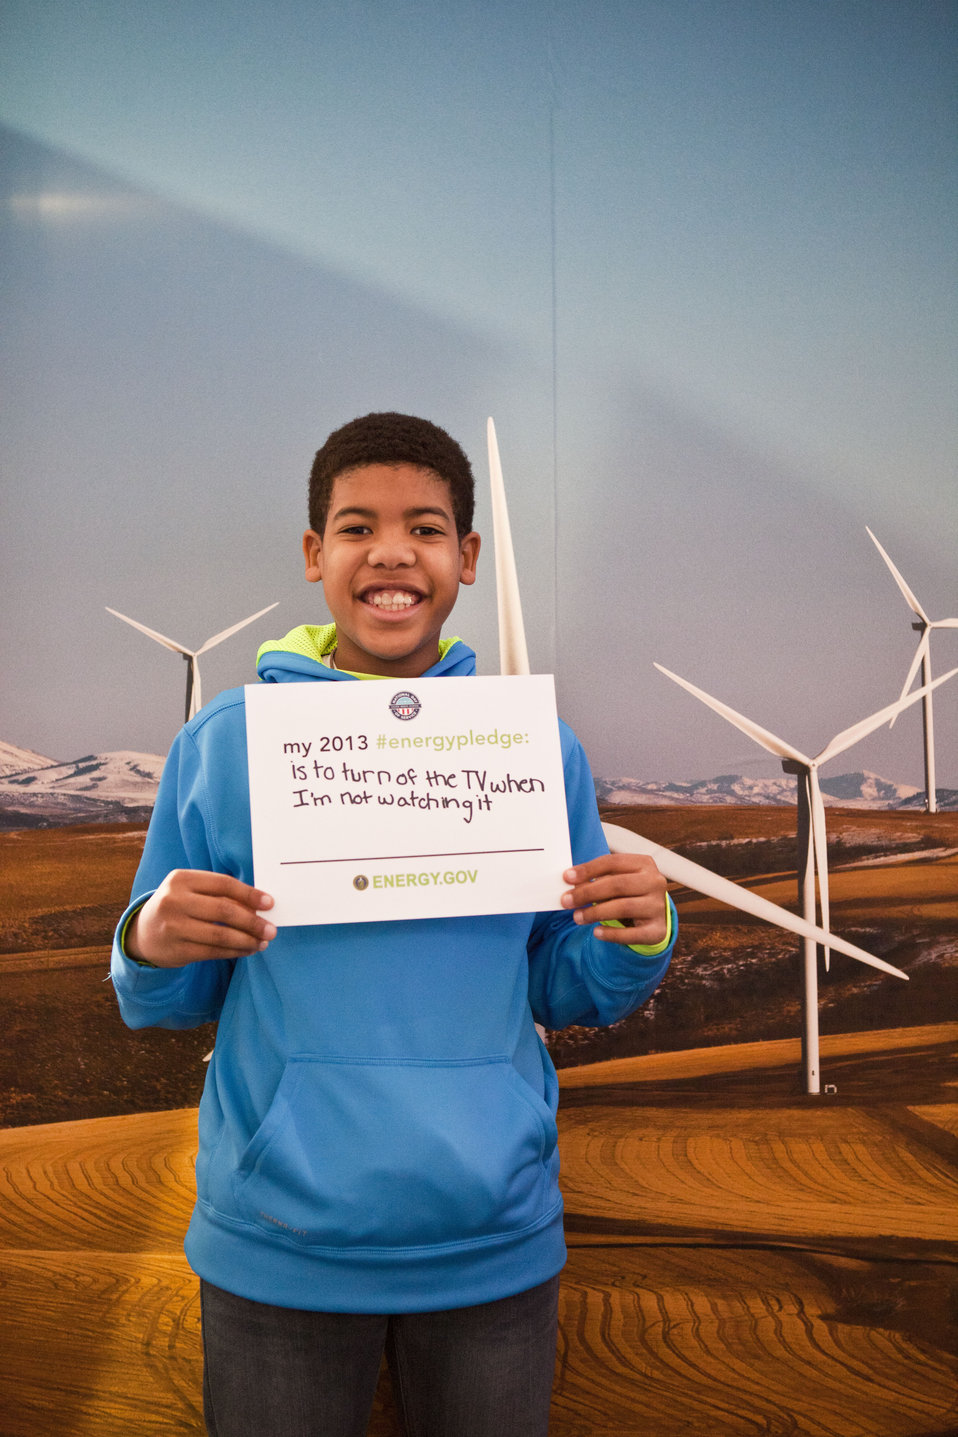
What's your #energypledge?